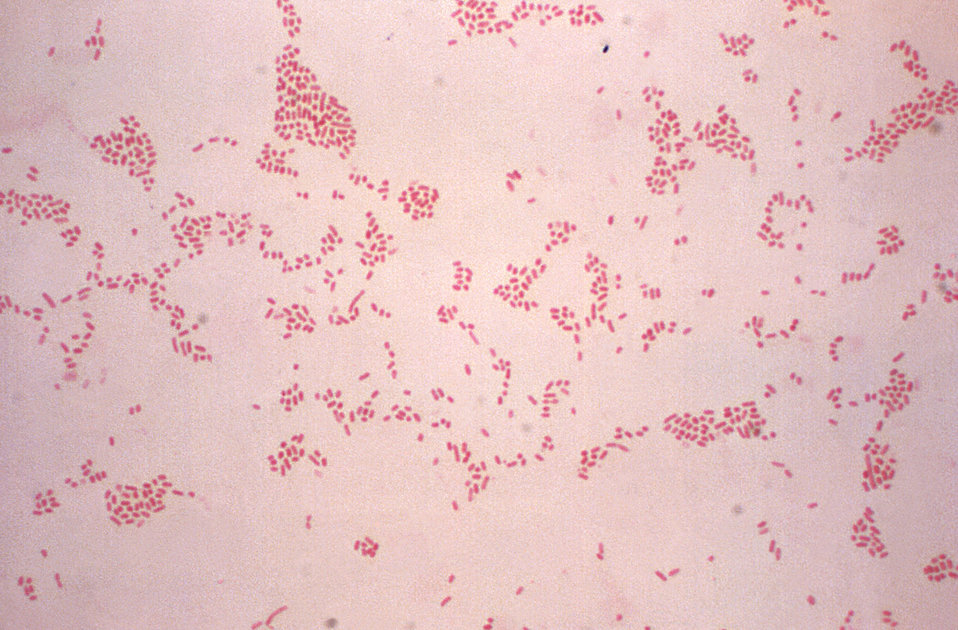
This Gram-stained photomicrograph revealed the presence of numerous beta-hemolytic, Gram-negative, Actinobacillus suis, coccobacillus bacteria.